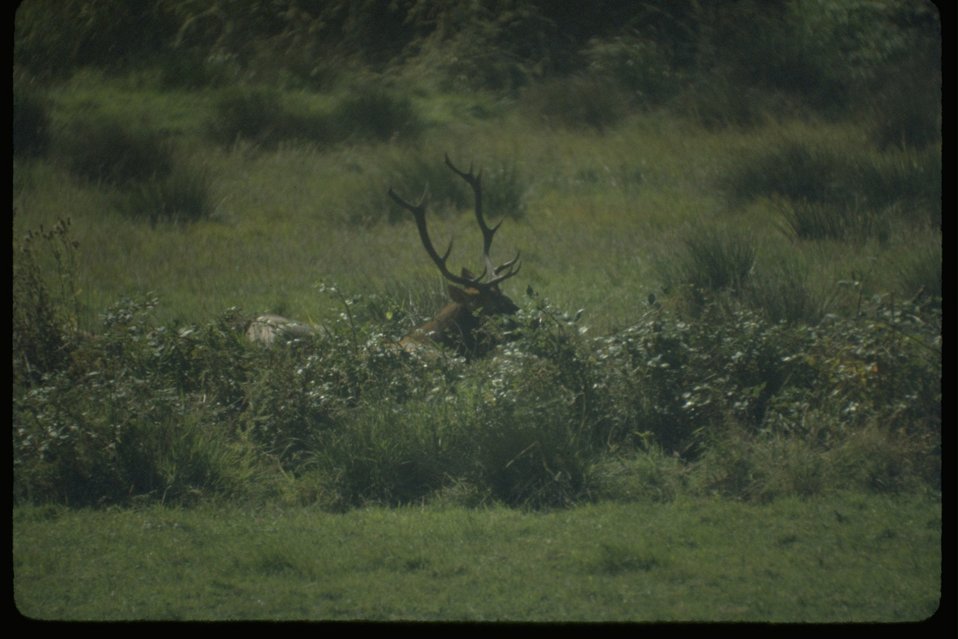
Elk in bush at Dean Creek.